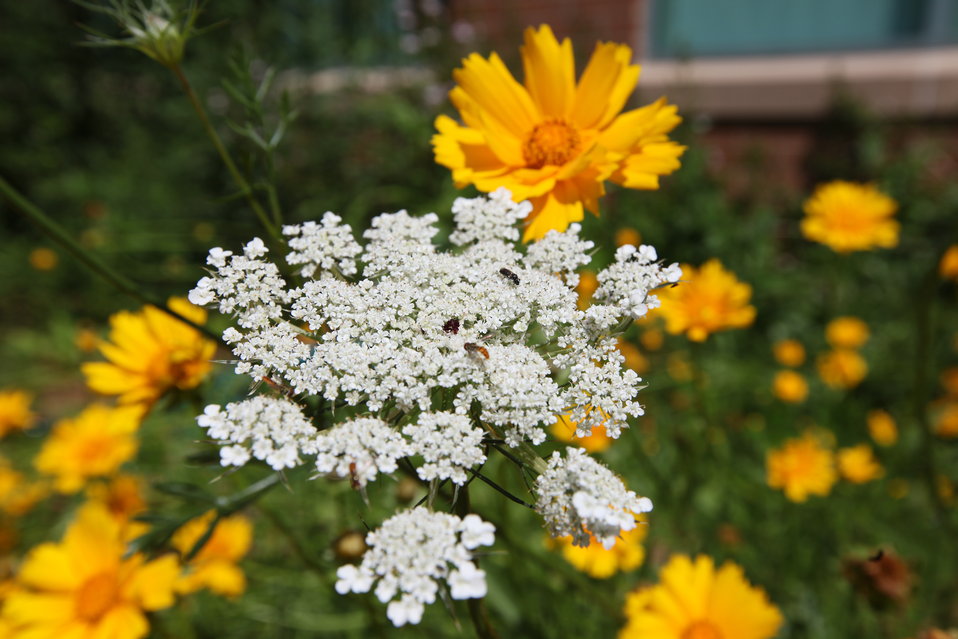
Pollinator Garden, Northeast Regional Office, Hadley, MA.